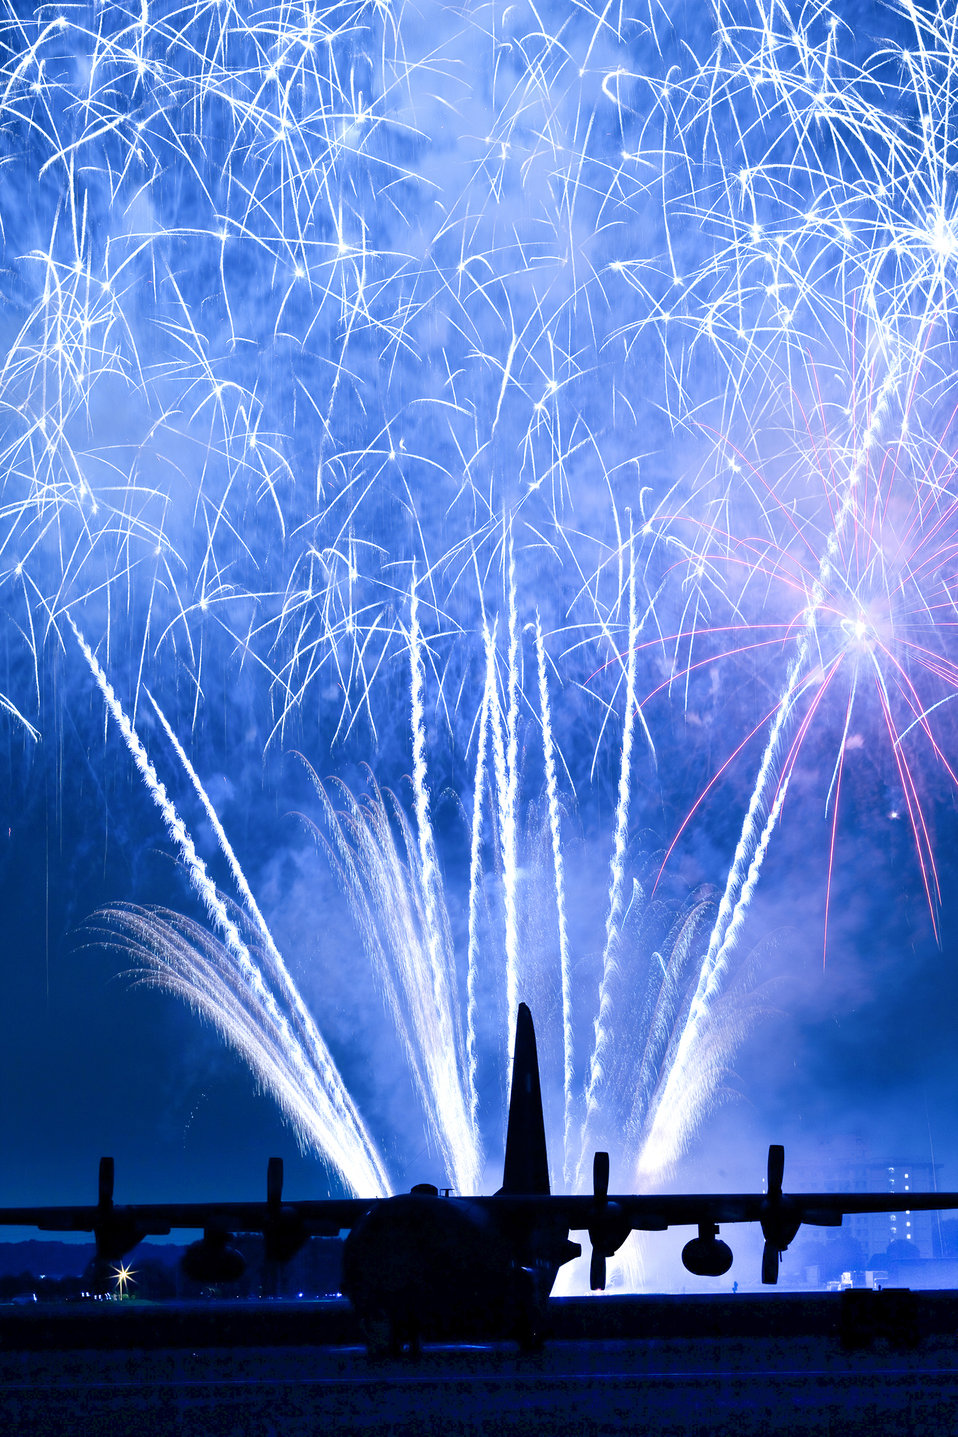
Lighting up the sky

Fireworks burst above Yokota Air Base, Japan, July 2, 2011, during Celebrate America.